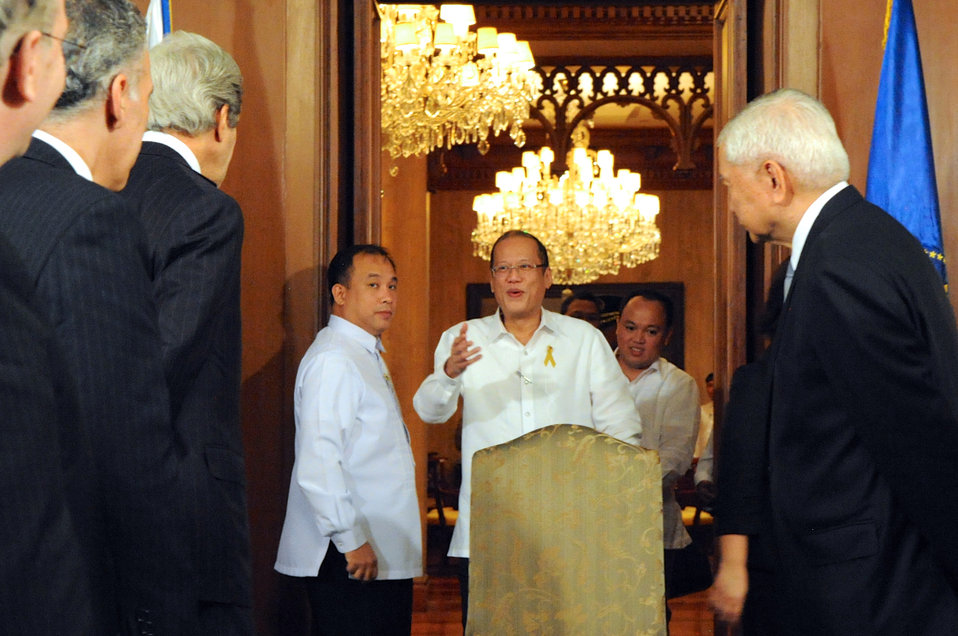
Secretary Kerry Greets Philippine President Aquino at Malacanang Palace

U.S. Secretary of State John Kerry and his delegation are greeted by President Begnino Aquino of the Philippines before a bilateral meeting and dinner at Malacanang Palace in Manila on December 17, 2013.